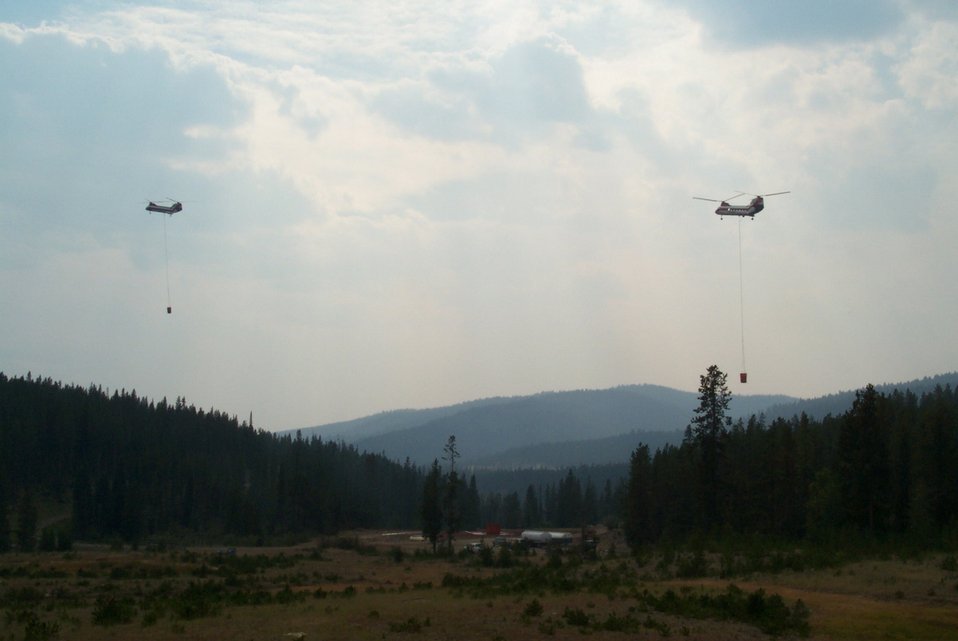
Helicopter drops Fire Clearwater Fire Salmon Field Office USRD Upper Snake River District